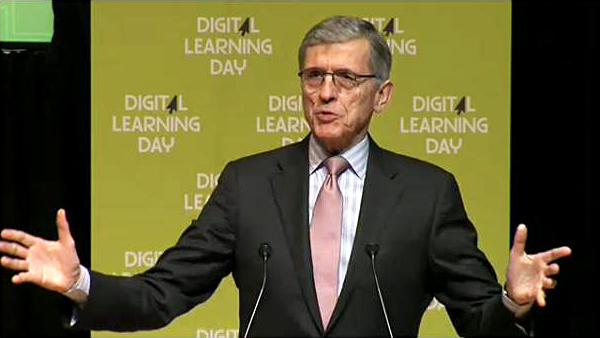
2.5.14 Digital Learning Day

FCC Chairman Wheeler delivering remarks at Digital Learning Day held on 2/5/2014 at the Library of Congress.